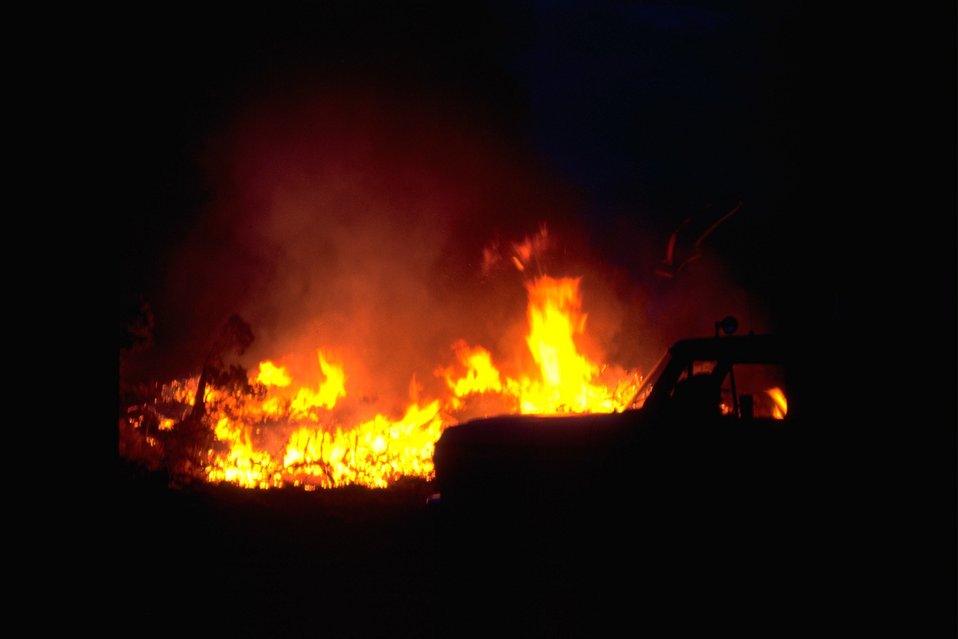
Night Burn at Cline Butte.